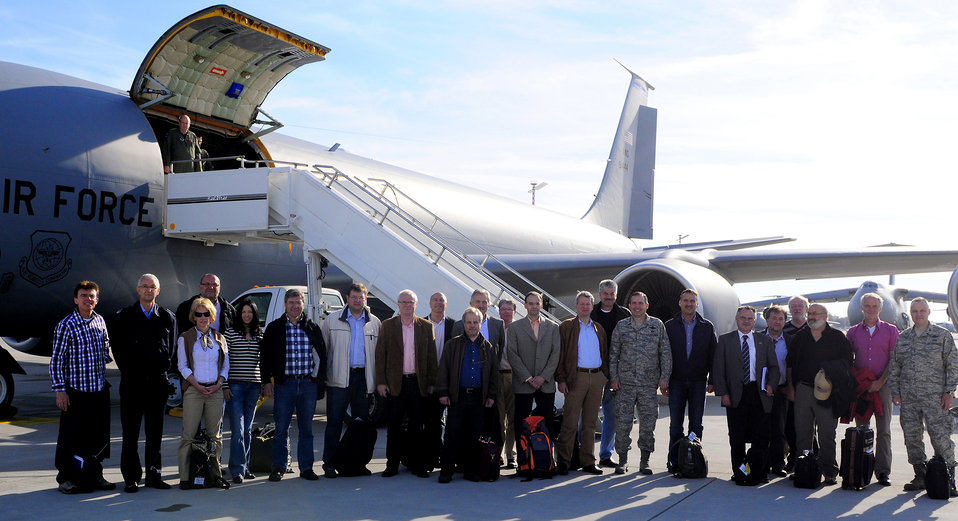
Civic Leader Tour 2011

Participants of the Civic Leader Tour 2011 pose for a photo on the flightline, Ramstein Air Base, Germany, May 9, 2011. United States Air Forces in Europe vice Commander, Lt. Gen. Stephen Mueller, escorted 17 host nation civic leaders on a four-day-tour to five USAF installations to highlight Ramstein's importance to the diversity of AF missions.